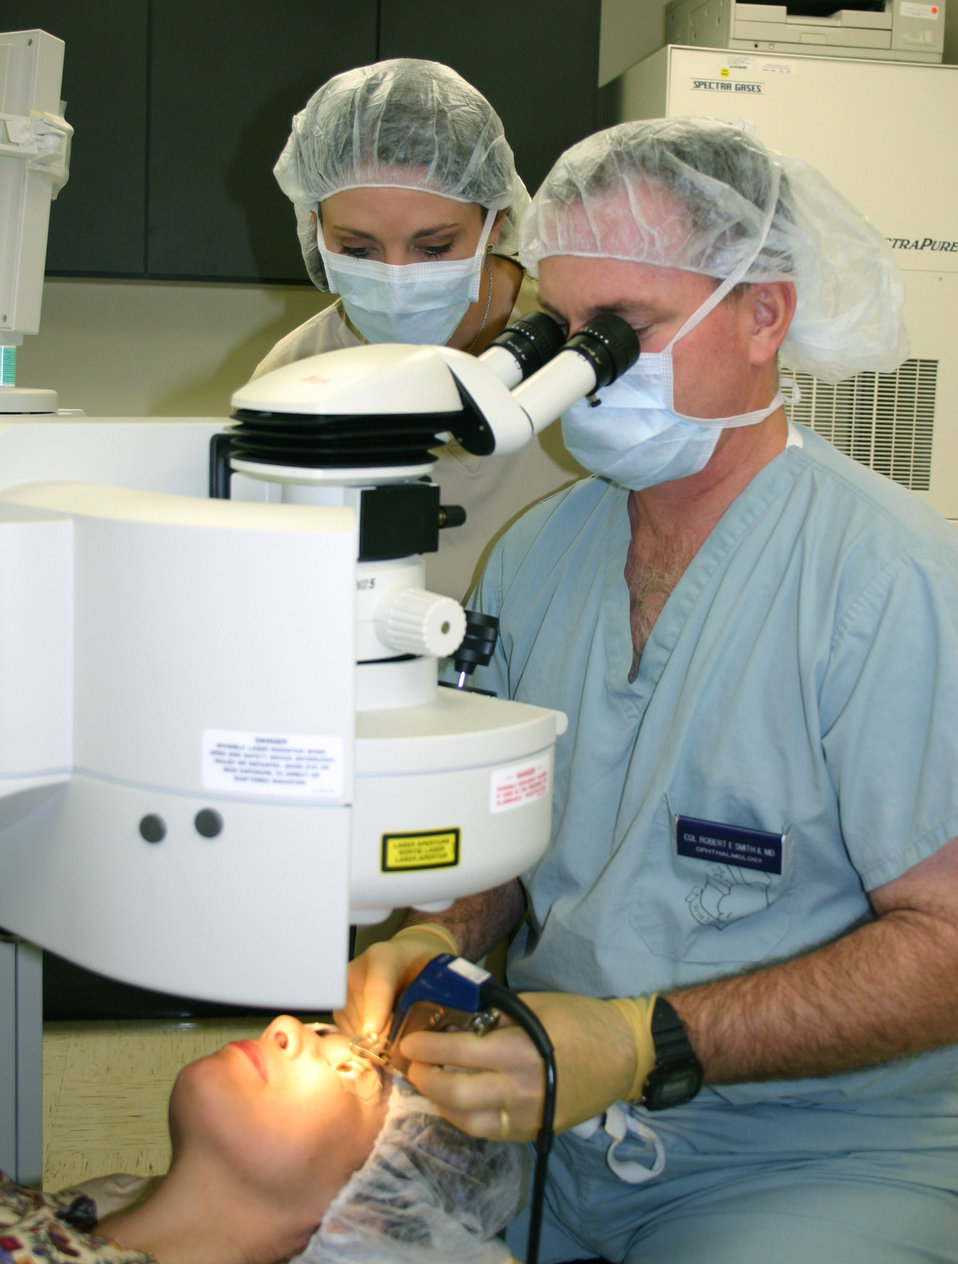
Air Force aims for 'weapons-grade' vision

LACKLAND AIR FORCE BASE, Texas -- Col. (Dr.) Robert Smith performs LASIK eye surgery on a patient at Wilford Hall Medical Center here. Certain aviators can now undergo a new laser eye surgery procedure. Dr. Smith is chief of cornea and refractive surgery at the medical center.